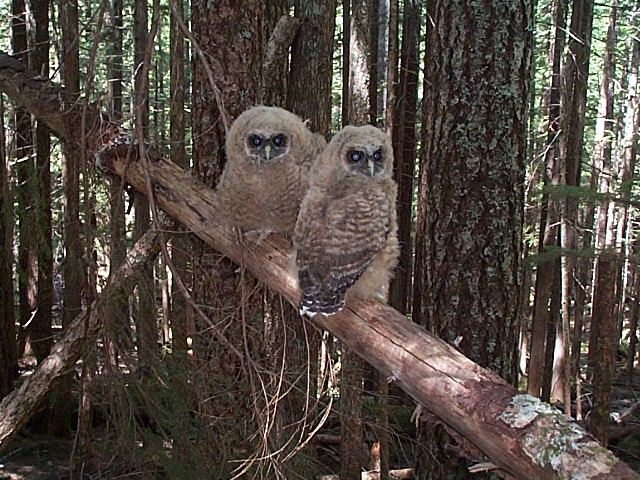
Pair of juvenile Spotted Owls